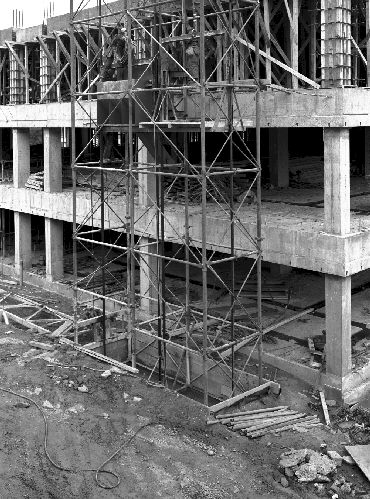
CDC Construction